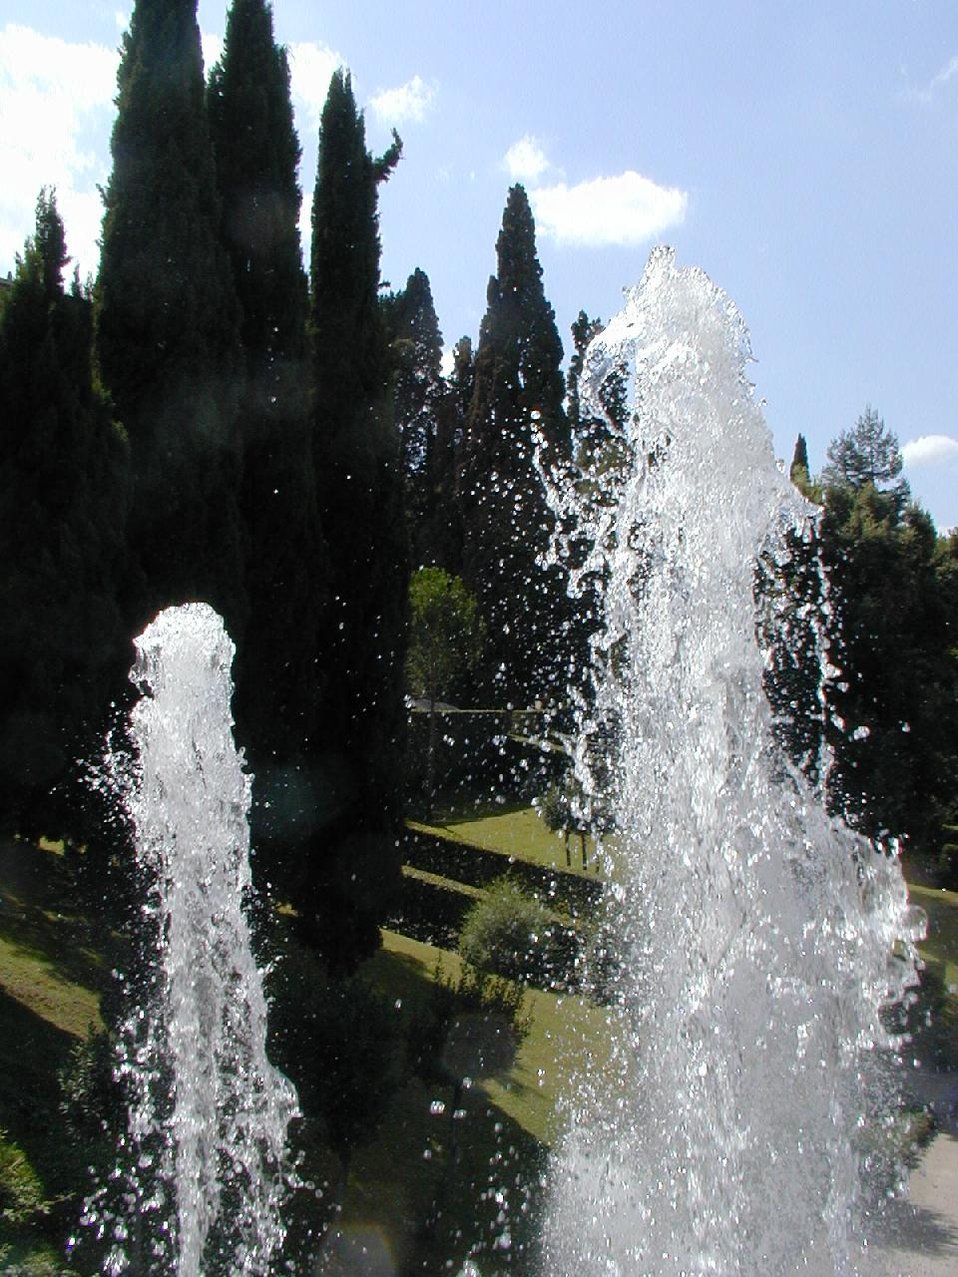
Italiano: Tivoli, Villa d'Este - zampilli